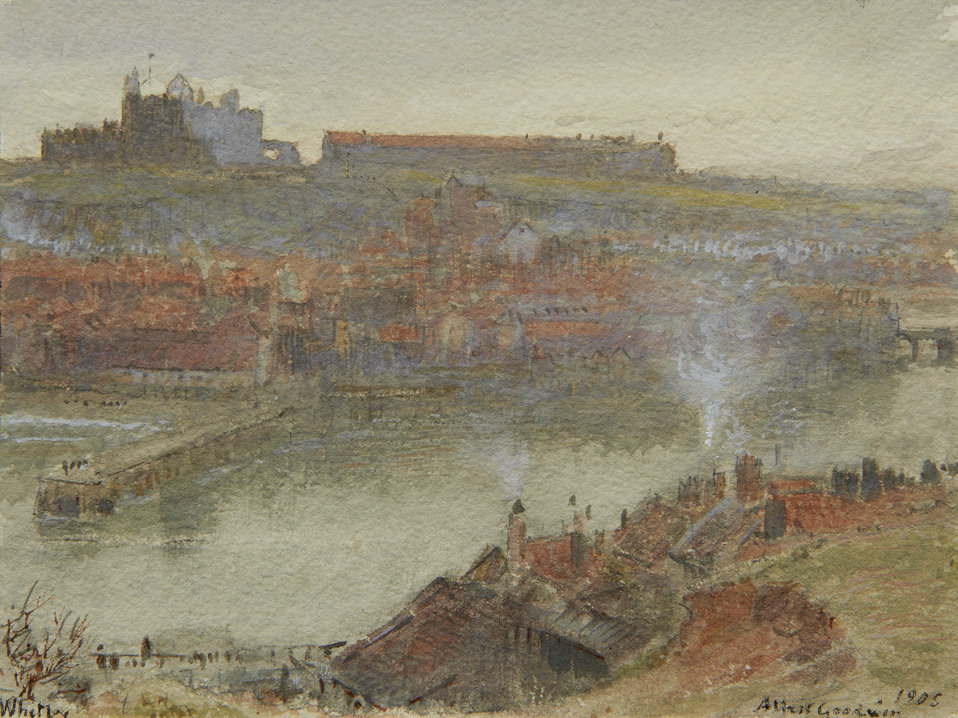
View of Whitby, signed and dated 'Albert Goodwin/1905' (lower right) and inscribed 'Whitby' (lower left) watercolour with traces of pencil and heightened with white, 13 x 17 cm